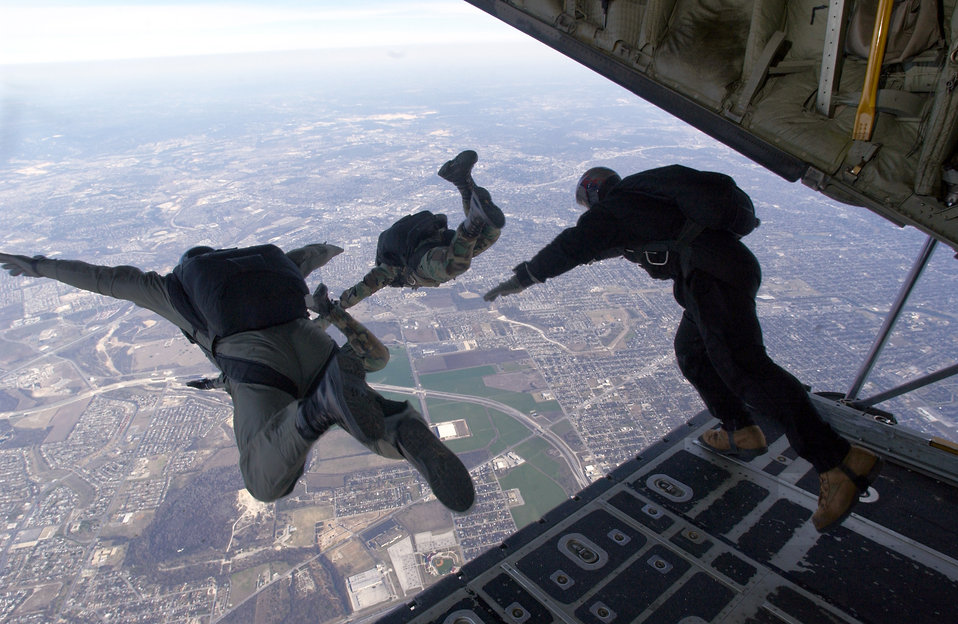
You might as well JUMP!

OVER LACKLAND AIR FORCE BASE, Texas -- Airmen from the 346th and 342nd Training Squadrons perform a high-altitude, low-opening parachute jump onto the base's parade grounds below Feb. 21. The proficiency training exercise had combat controllers and pararescuemen exiting the aircraft at 9,500 feet, traveling at 130 knots, and landing on a precise target at the drop zone.